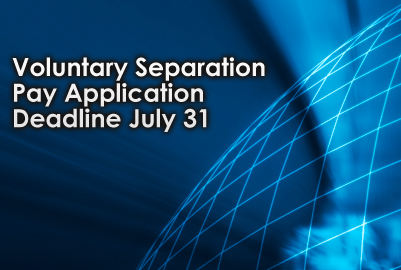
Voluntary Separation Pay application deadline